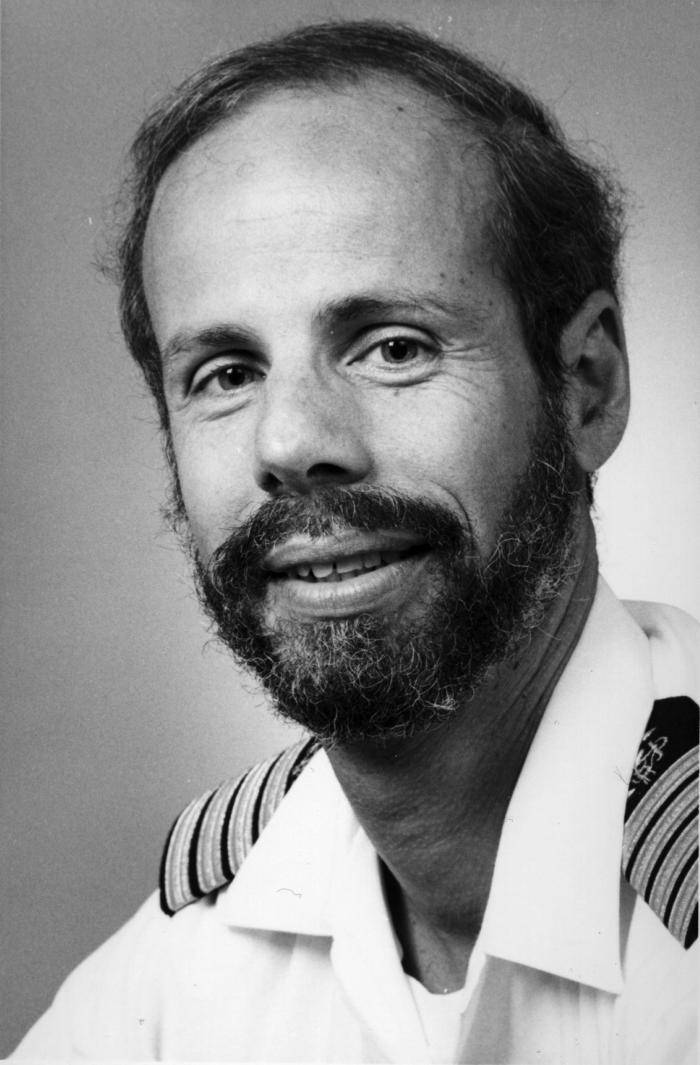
This 1991 photographic portrait showed U.S. Public Health Service Commissioned Corps medical officer Phillip Graitcer, D.M.D., M.P.H.